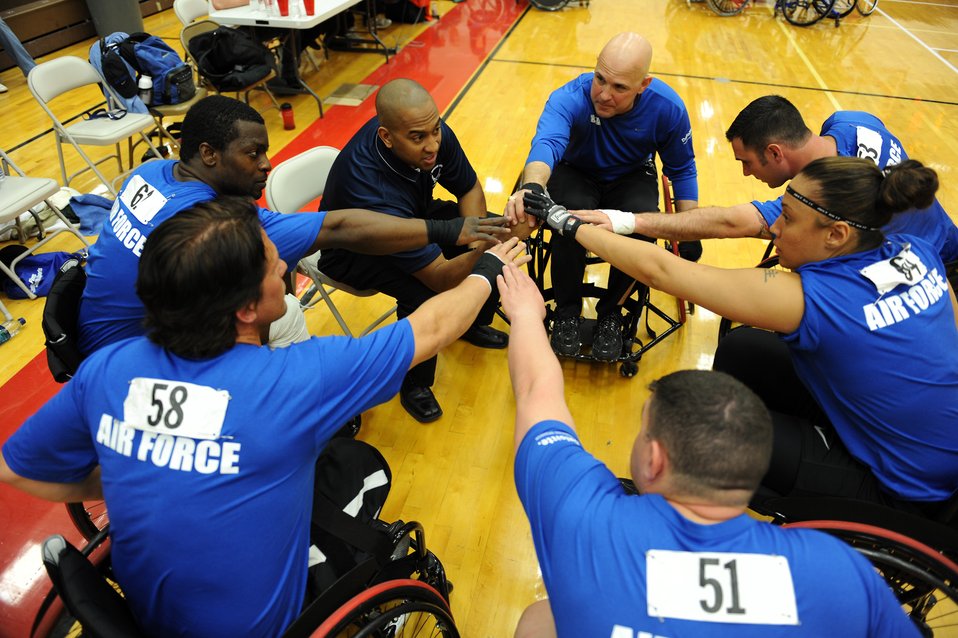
AF Basketball

Team Air Force throws their hands in for a quick cheer before playing a game during the Warrior Games bronze medal match against the Navy May 12, 2010 at the Olympic Training Center, Colorado Springs. The Air Force went on to win the game 13-10. The Warrior Games competition began May 10 and finishes on May 14, 2010 at the U.S. Olympic Training Center in Colorado Springs.